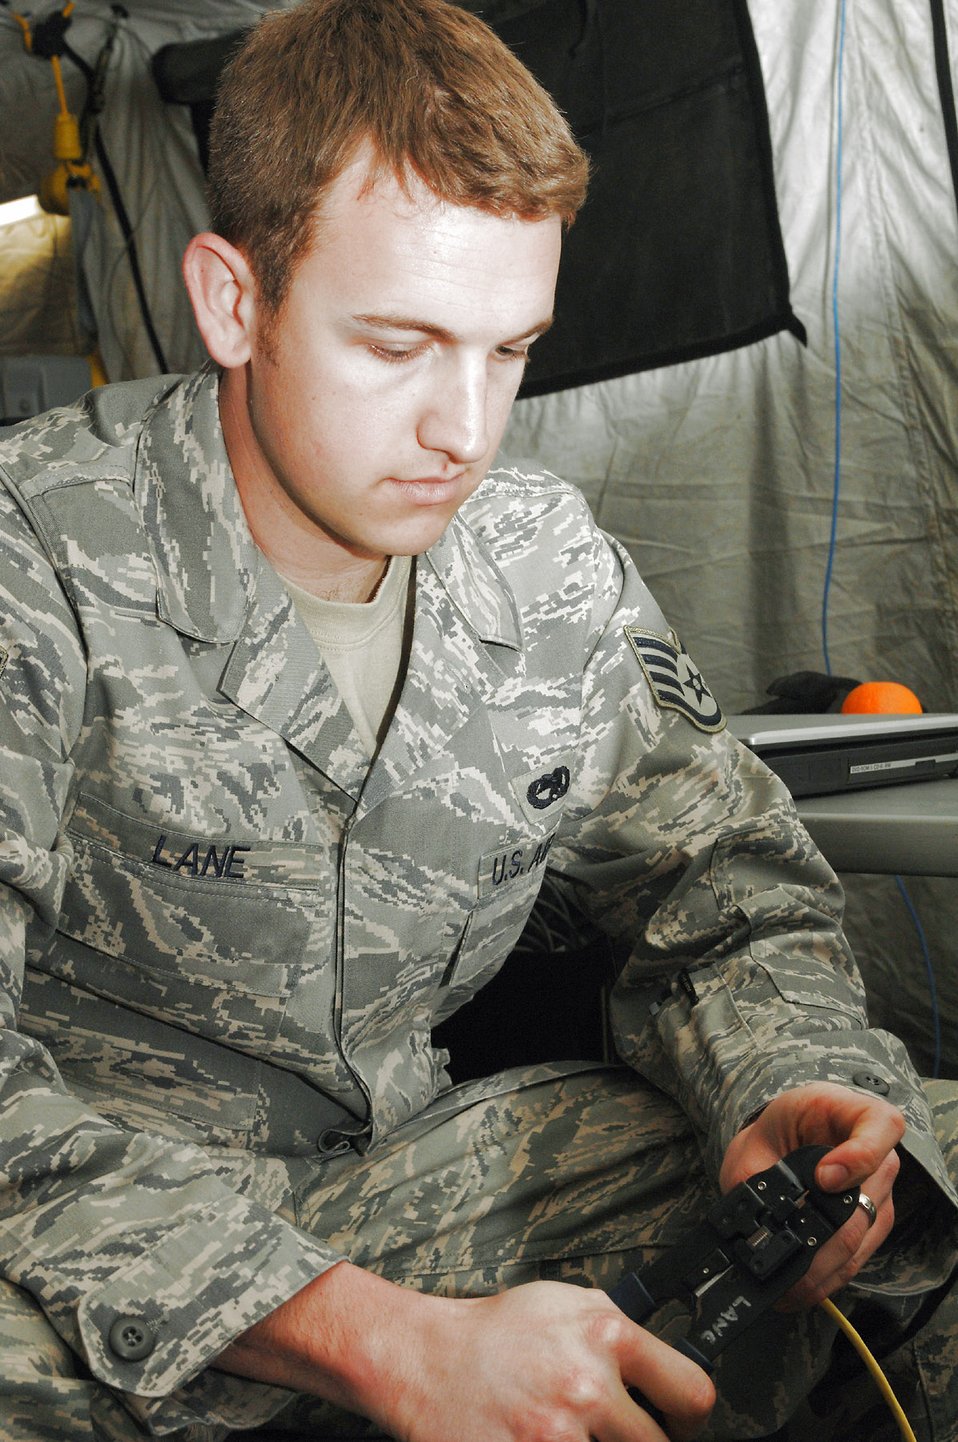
Airmen set up communication lines for exercises in Croatia

Staff Sgt. William Lane terminates a cable during the Medical Central and Eastern Europe Exercise 2008 April 29 at Divulje Training Base, Croatia. Seventeen nations are participating in the exercise May 2 through 15. The exercise focuses on mass-casualty training scenarios and humanitarian aid in response to crises situations. More than 400 multinationals are attending the exercise in support of the Partnership for Peace initiative. Sergeant Lane is assigned to the 1st Combat Communications Squadron from Ramstein Air Base, Germany.